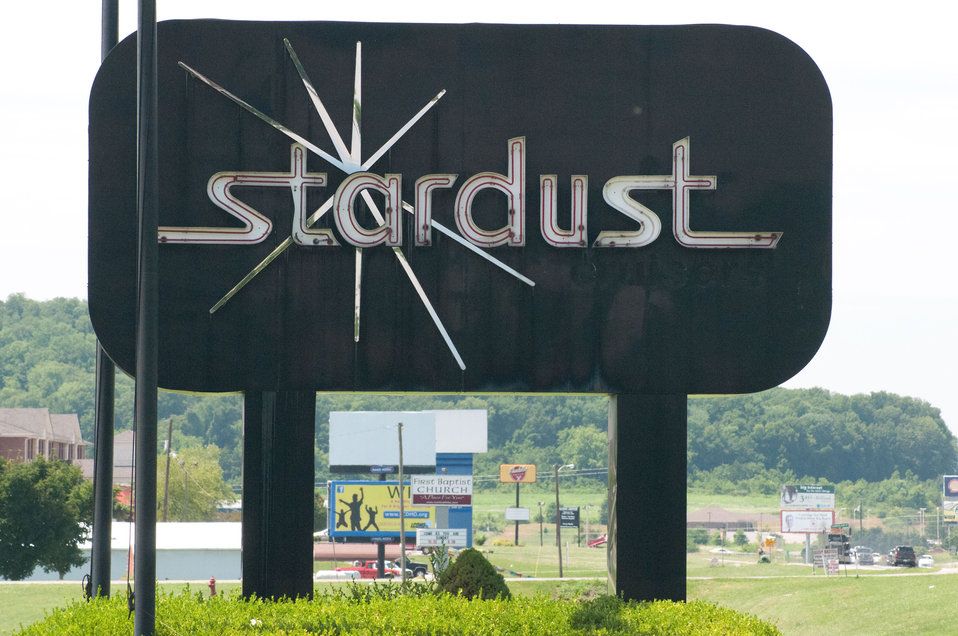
Stardust Industries is using it's expertise in luxury house boats to help retool and redirect Monticello, Kentucky’s houseboat manufacturing industry on Wednesday, July 13, 2011 The houseboat industry has been decimated because of the struggling economy – by using its facilities and manpower to create low-cost housing that is energy efficient. Rural Development obligated $499,000 in Rural Business Enterprise Grant funds to support this unique endeavor. Up until a few years ago, there were several successful houseboat manufacturers in the four-county area surrounding the city of Somerset. Most have now ceased operation or drastically reduced output, which has led to dramatic, long-term job loss. These new energy efficient homes will be constructed in redesigned, refitted houseboat factories using local workers that have been retrained.